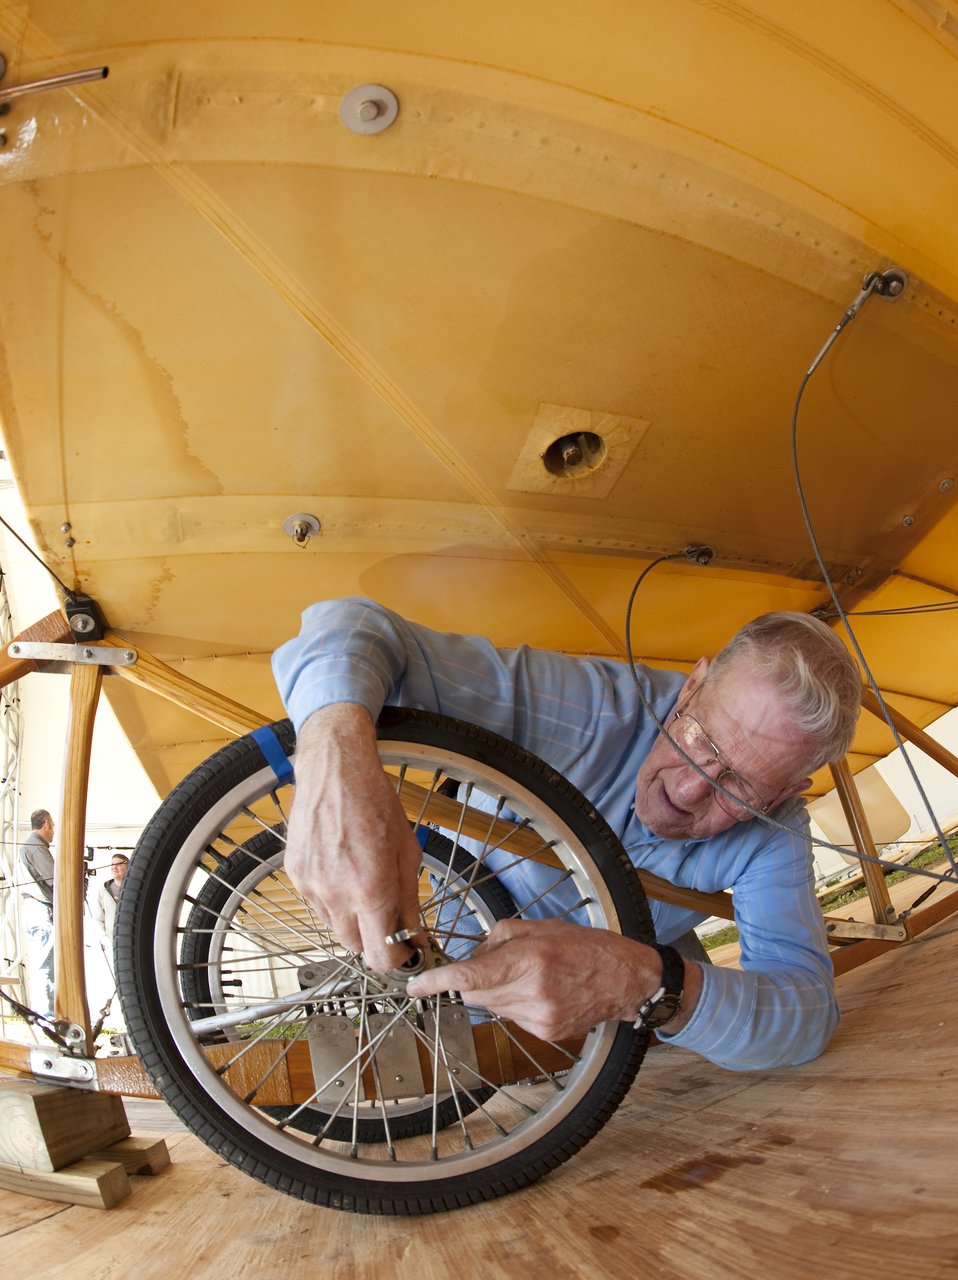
Wright

Frank Goepferich attaches the right dual wheel assembly to the undercarriage of